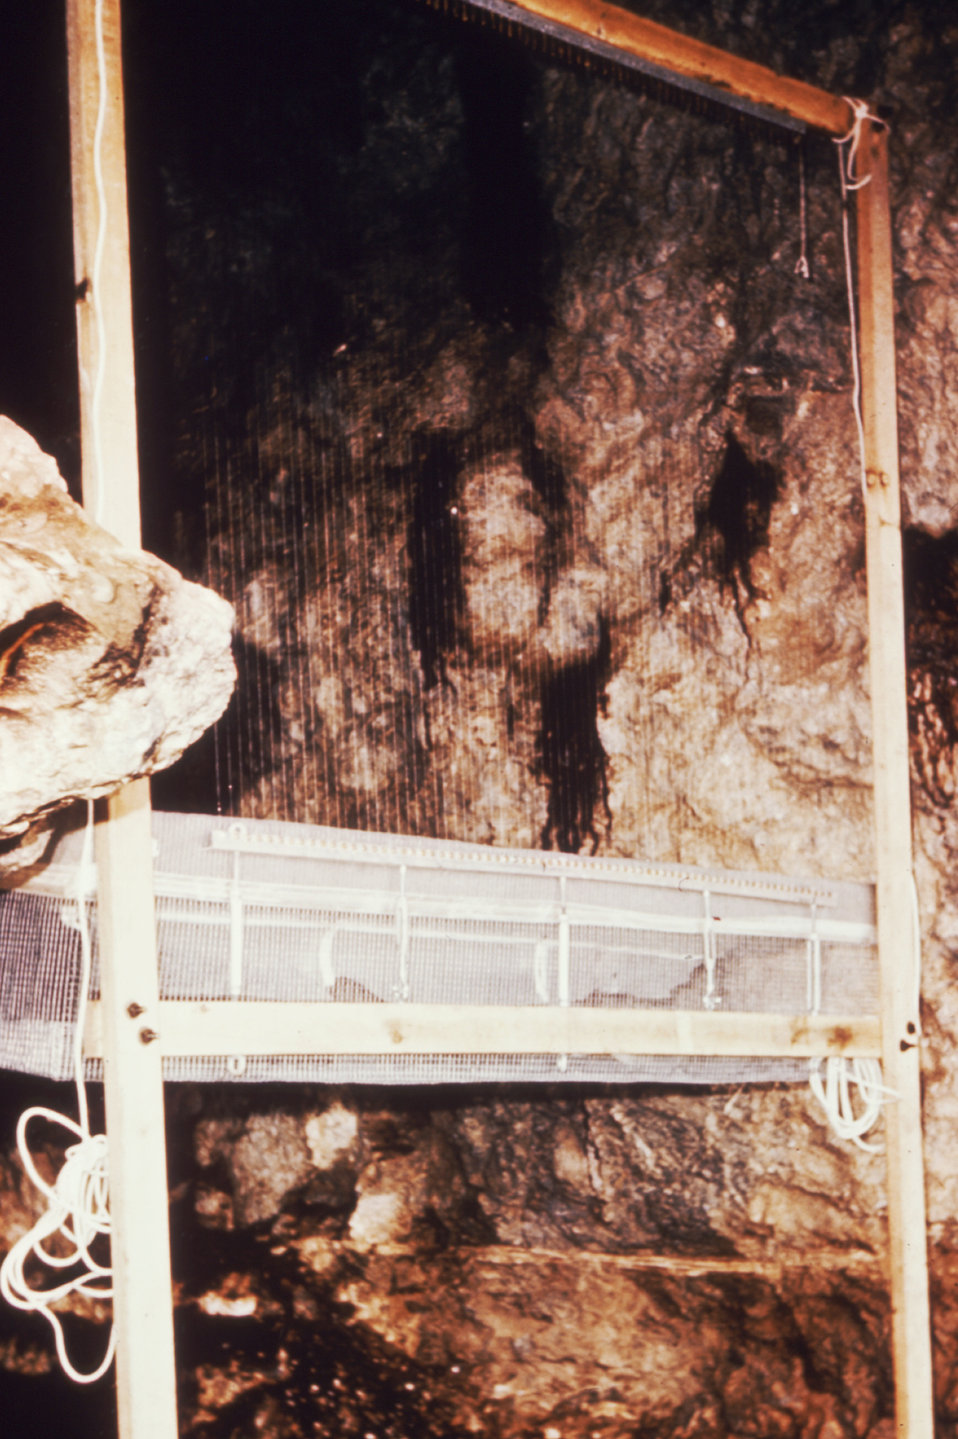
Here a Constantine bat trap (wire collector) was placed within a cave for collecting bats during a 1974 arbovirus study.